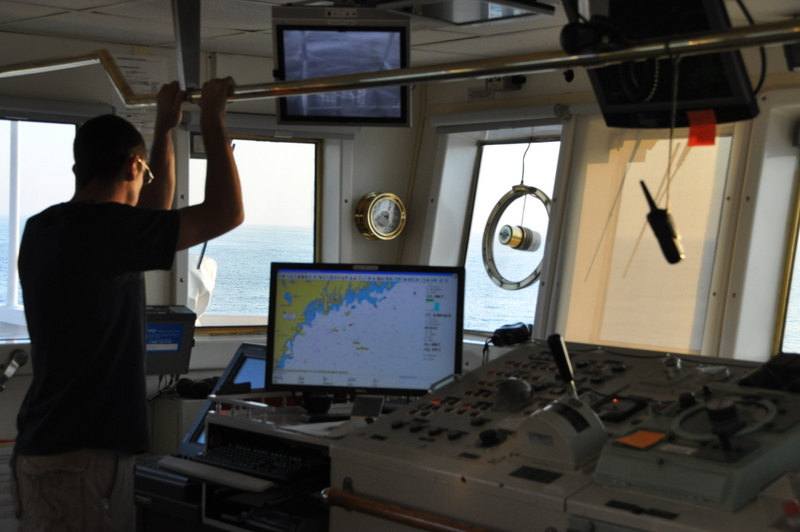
July 2009, Morning on the bridge

Mornings were generally quiet up on the bridge, and a nice place to have a cup of coffee after my sampling shift. It was the perfect place to catch up with the ship's crew and Captain Jere about the plan for the day. In this photo, OSV Bold crew member Derek Tuttle, OS.